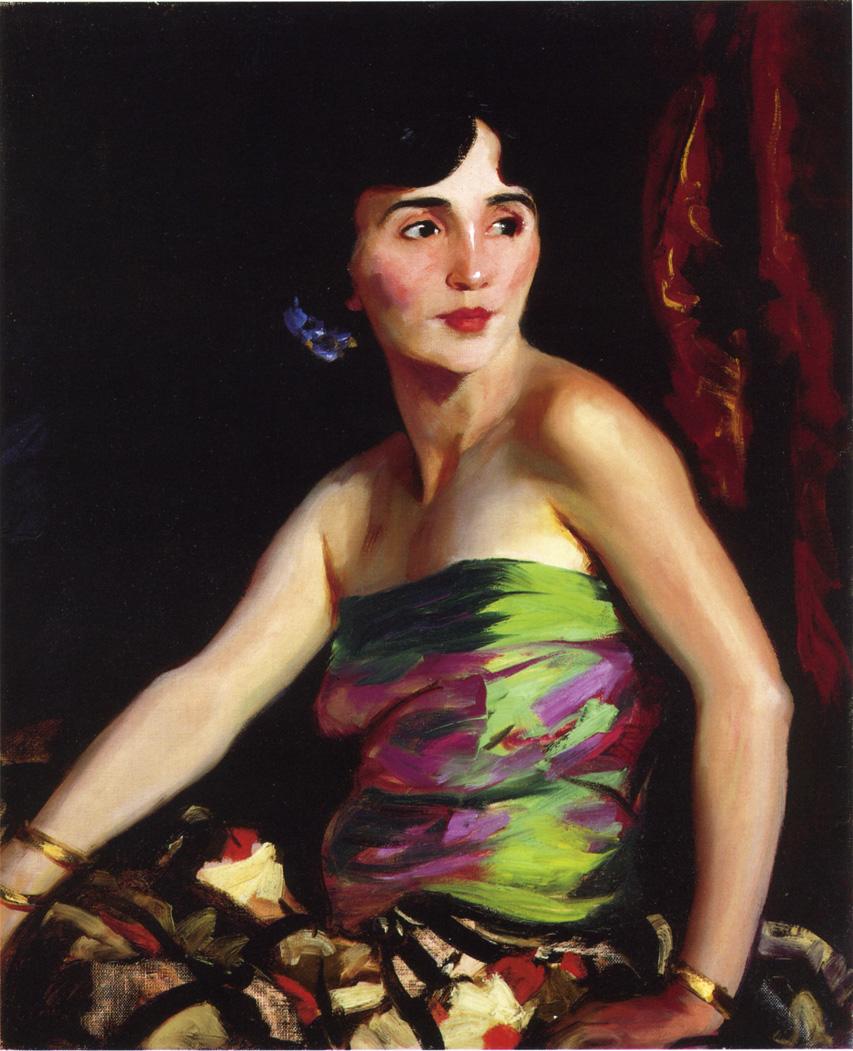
Henri Robert Isolina Maldonado Spanish Dancer